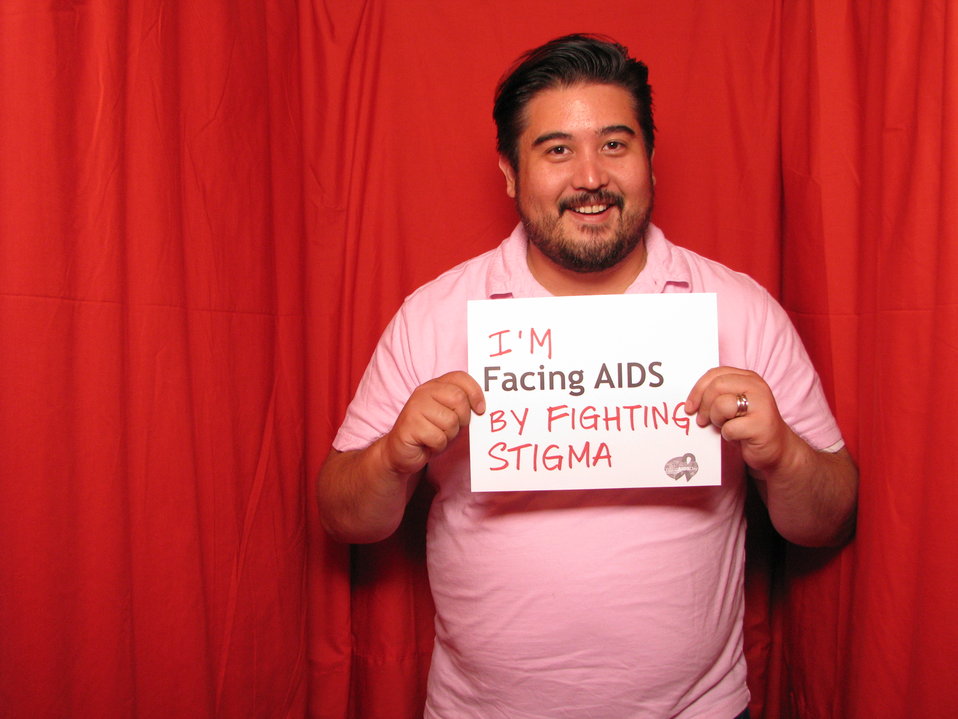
I'm FACING AIDS BY FIGHTING STIGMA.

From the AIDS.gov photo booth at the U.S. Conference on AIDS, September 2010 (Orlando, FL).